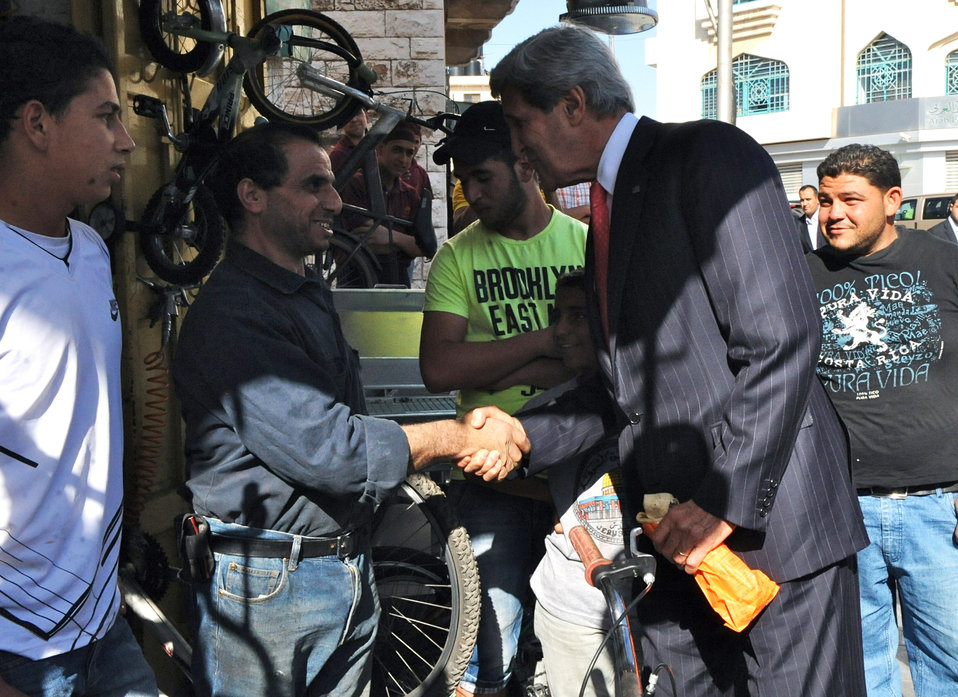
Secretary Kerry Greets a Shopkeeper in Ramallah

U.S. Secretary of State John Kerry greets a shopkeeper in Ramallah on May 23, 2013.